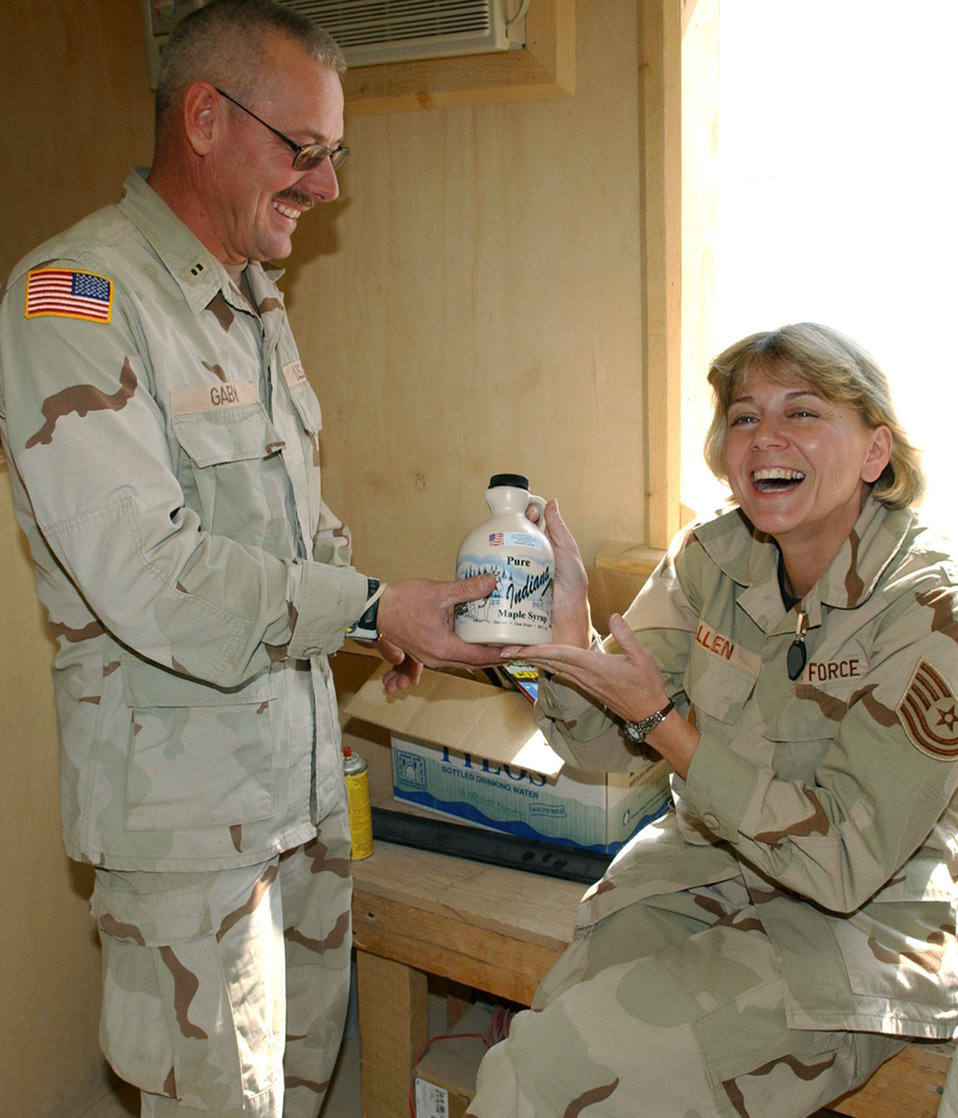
Sibling reunion 'sweet' for Air Force reservist

KANDAHAR AIRFIELD, Afghanistan -- Chief Warrant Officer Tim Gaby surprises his sister, Tech. Sgt. Rebecca Jo Allen, with a quart of maple syrup from the family farm back in northeastern Indiana. Sergeant Allen is a passenger terminal nightshift manager assigned to the 455th Expeditionary Logistics Readiness Squadron at Bagram Air Base, Afghanistan. Chief Gaby is an ammunition supply point accountable officer assigned to the 221st Ordnance Co. The siblings saw each other for the first time in three years while deployed in Afghanistan.